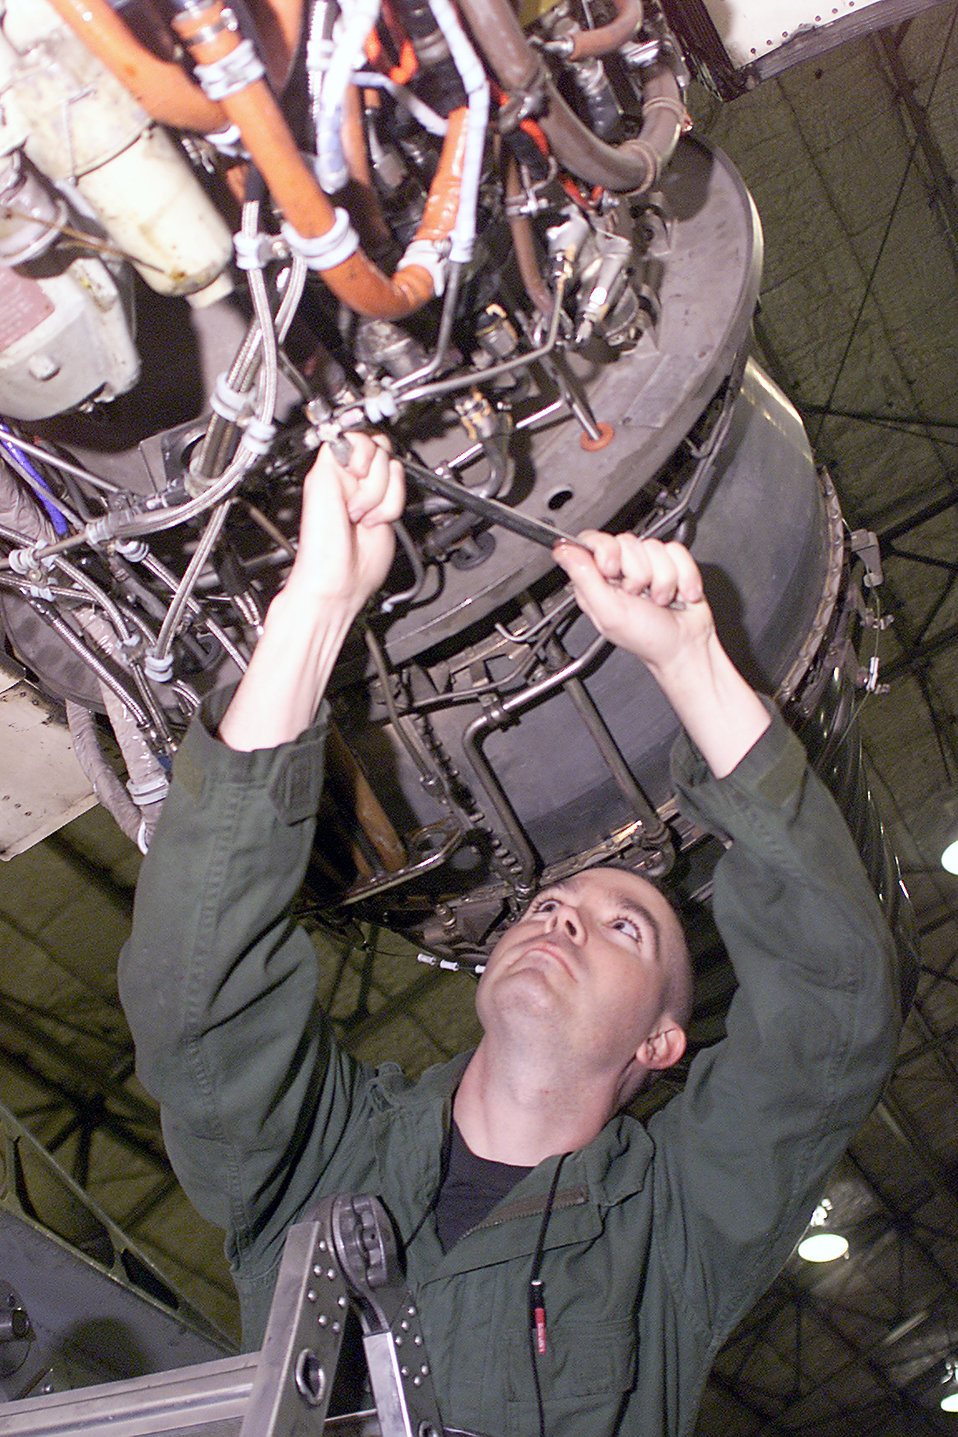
Chip detector

OSAN AIR BASE, South Korea -- Staff Sgt. James Dougan Jr. inspects a chip detector on an A-10 Thunderbolt II engine during a periodic phase inspection here March 31. Sergeant Dougan is an aerospace propulsion journeyman from the 51st Maintenance Squadron.